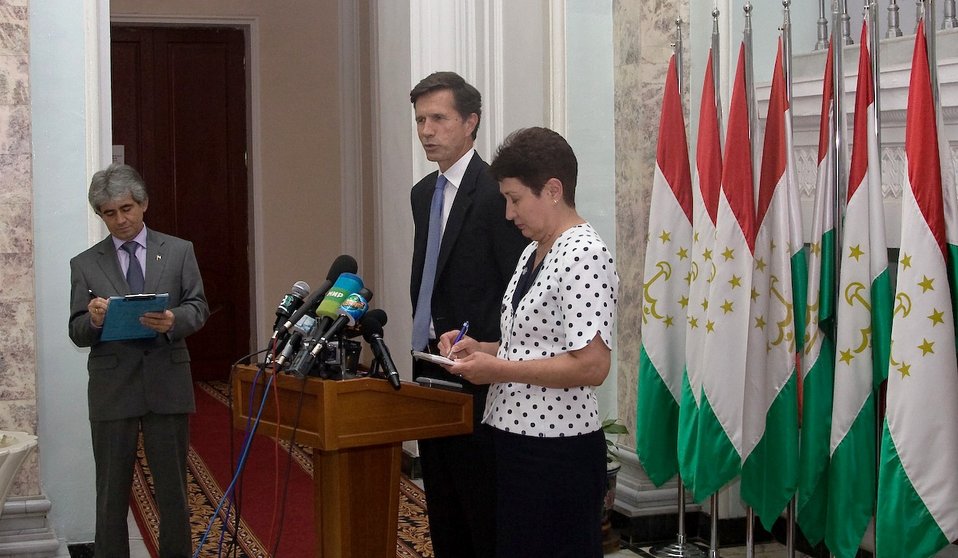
Assistant Secretary Blake Visits Tajikistan

U.S. Assistant Secretary of State Robert O. Blake visits Dushanbe, Tajikistan, on September 1, 2010.